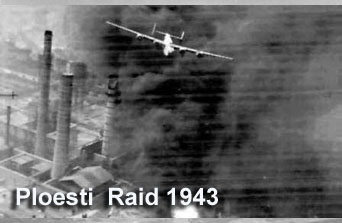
Ploesti Raid 1943

A B-24 Liberator flies over the smokestakes at the oil refinery in Ploesti, Rumania. The Allies tried to stem Nazi oil production from this plant in a series of attacks. The most famous mission was Operation Tidal Wave which began Aug. 1, 1943.